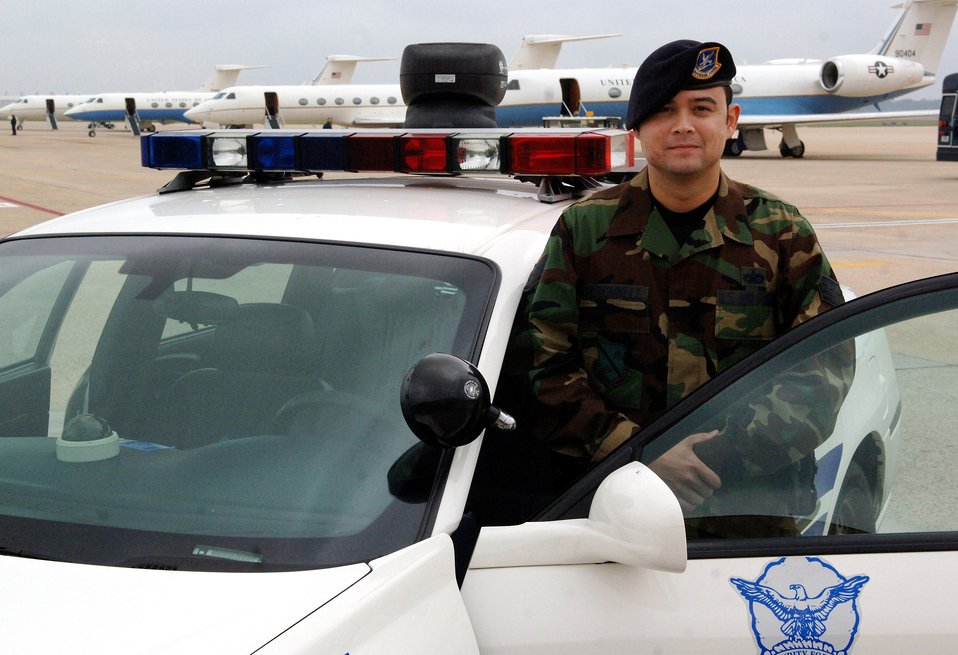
Airman keeps dedication VIPs safe

Staff Sgt. Joseph O'Donnell patrols the flightline on Oct. 11 at Andrews Air Force Base, Md. Sergeant O'Donnell is a protective services leader with the 316th Security Forces Squadron.